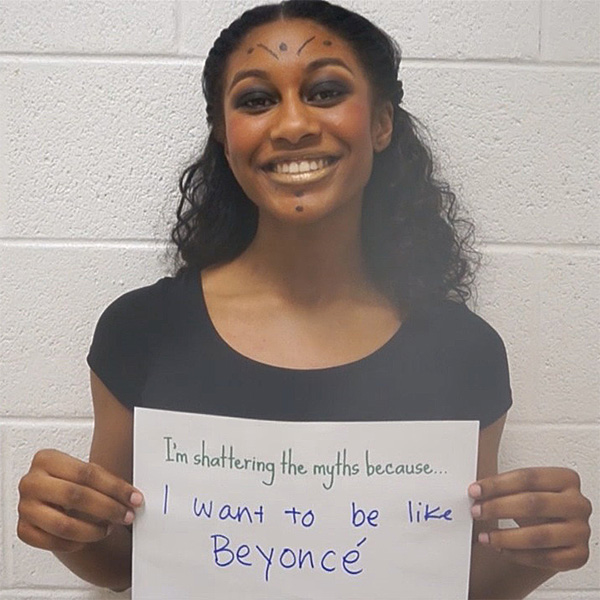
Be Like Beyonce

Joi, 15 years explains how she is 'Shattering the Myths' as she kicks off the 2014 NDFW. Joi is a student from Ms. D’Anna’s 3rd period dance class from James Hubert Blake High School in Silver Spring, Md.